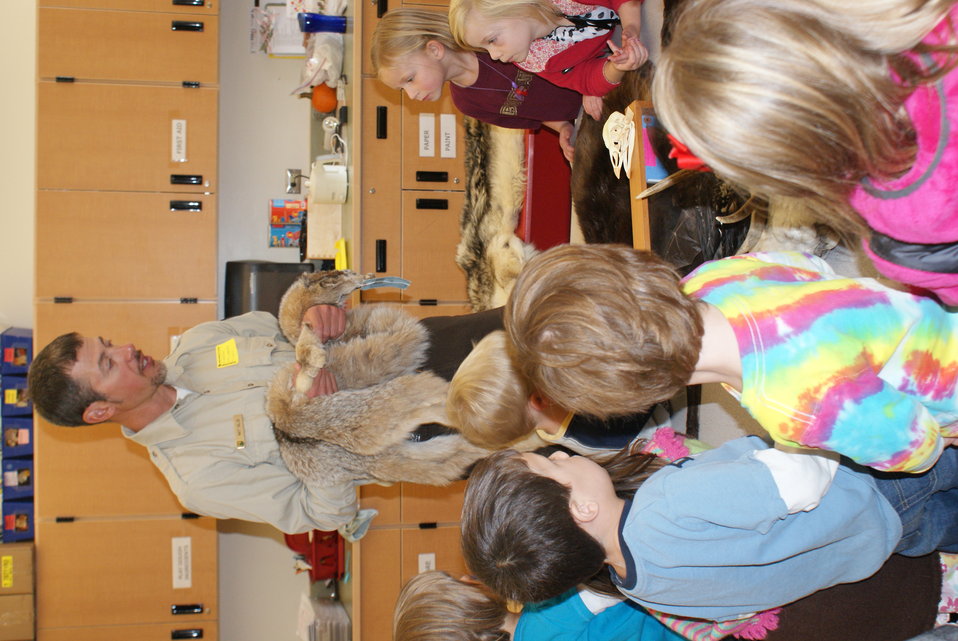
Scientists in the Community Program

U.S. Fish and Wildlife Service Mountain-Prairie Region Deputy ARD for External Affairs, Matt Kales, introduces early childhood education students at William Roberts Elementary School in Denver to some of Colorado's native and historic wildlife species.